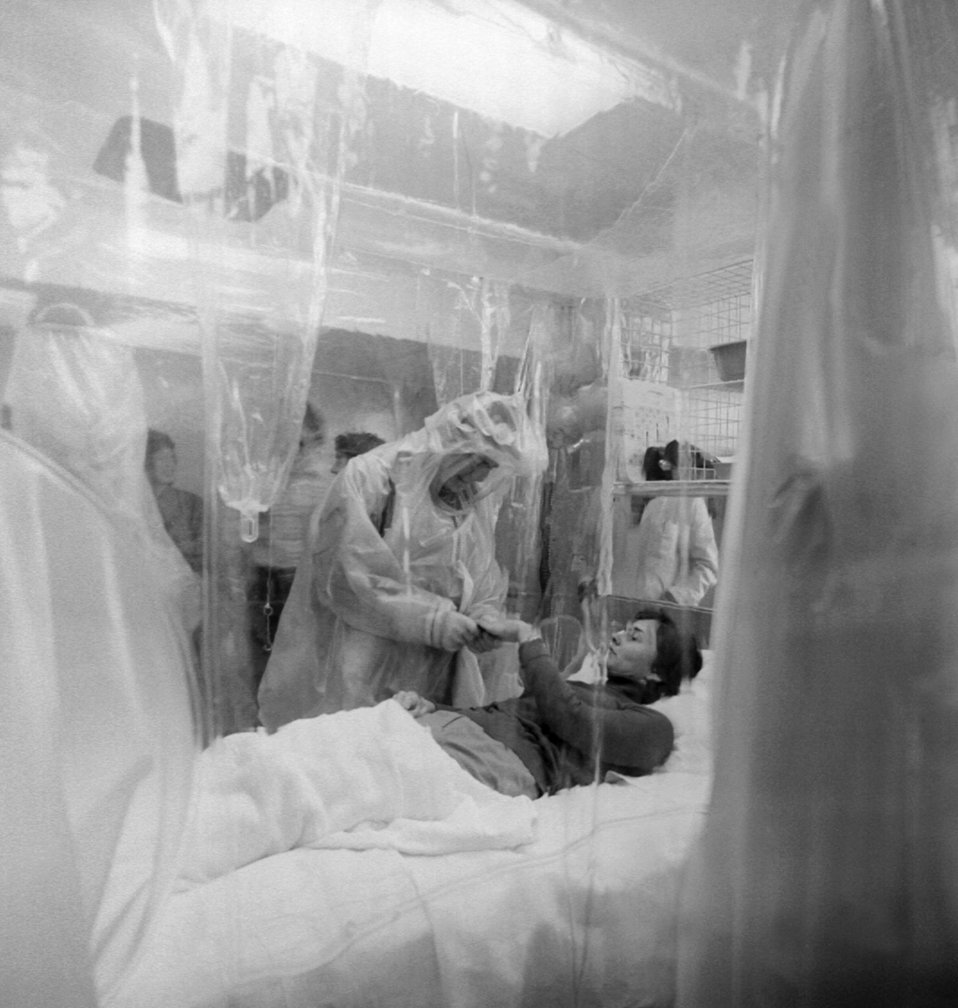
A photograph of a patient in a Vickers Isolation Unit.